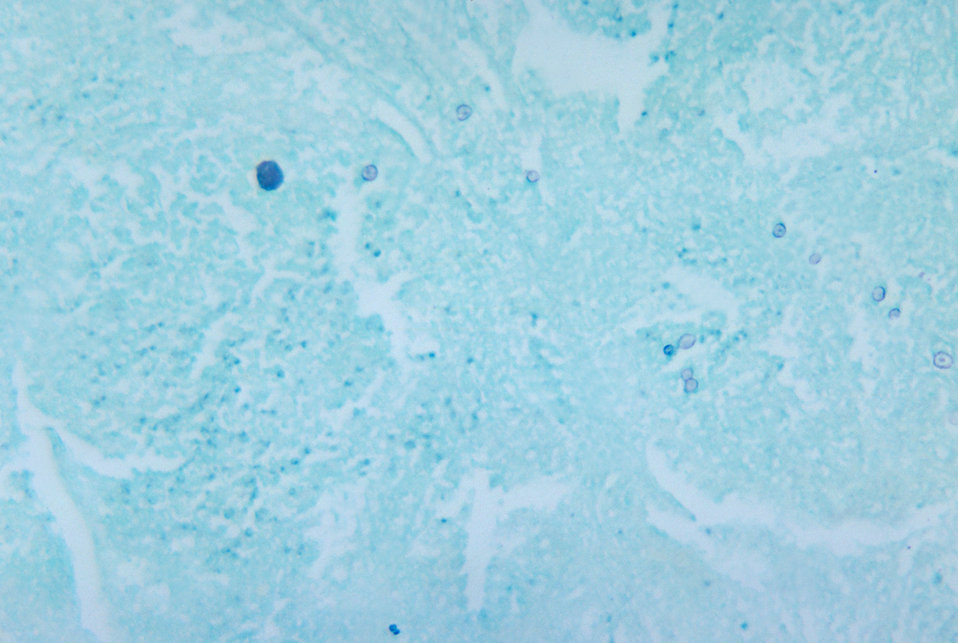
Using methenamine silver stain, this photomicrograph reveals spherules of the fungus Coccidioides immitis.